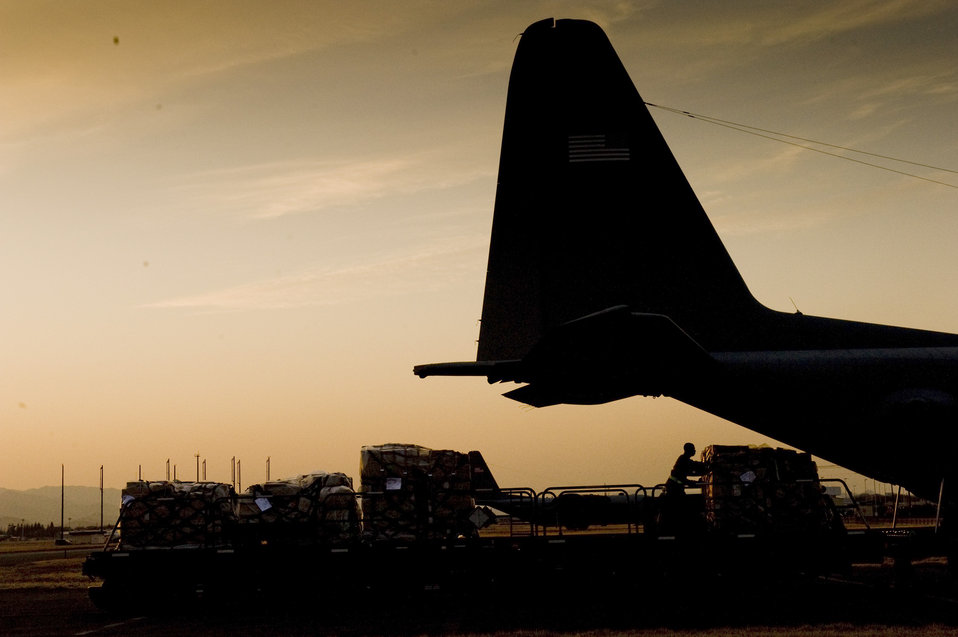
Medical supplies for Japan

Pallets of medical supplies are pushed onto a C-130 Hercules March 19, 2011, at Yokota Air Base, Japan.